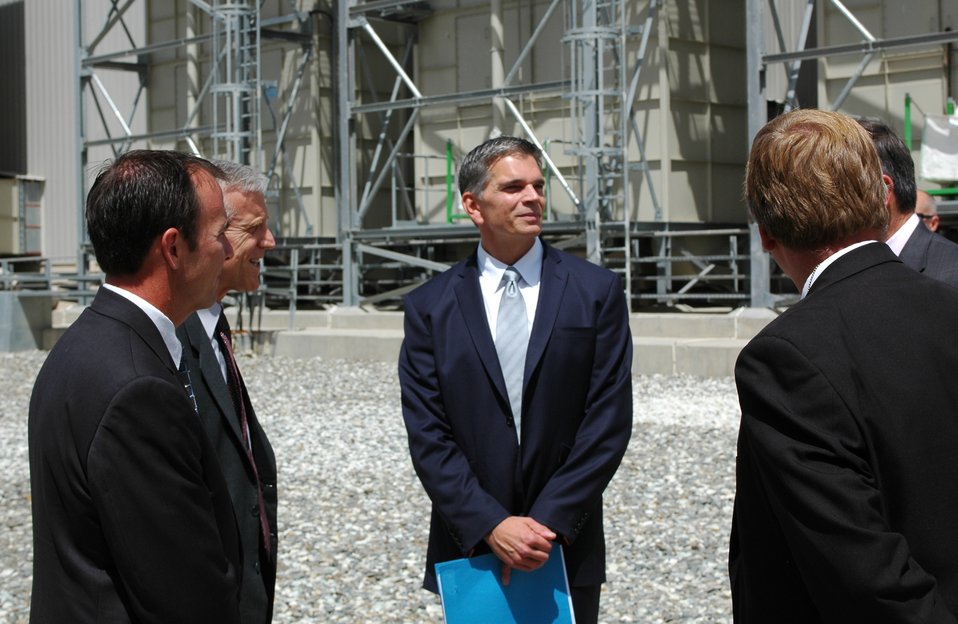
105 MW Tarakhil Power Plant Handover